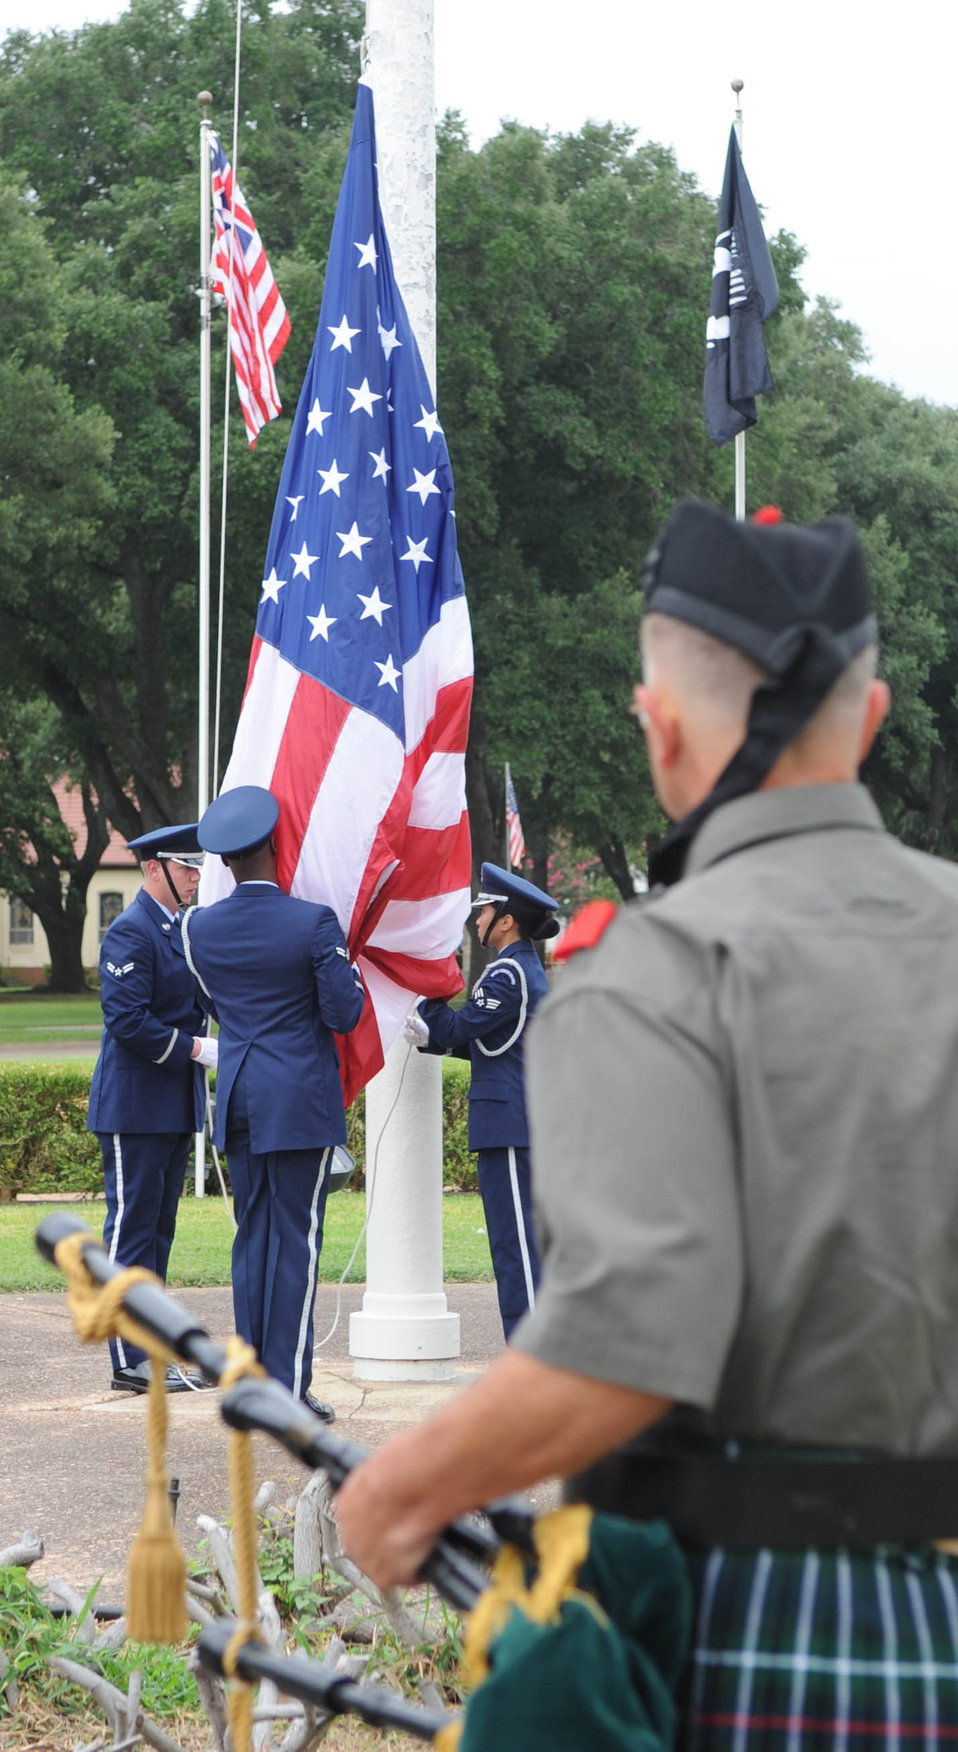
Remembering RAIDR 21

Base Honor Guard Airmen at Barksdale Air Force Base, La., raise the flag during the RAIDR 21 Remembrance Ceremony held at the 2nd Bomb Wing flag pole July 21. More than 200 Airmen, friends and family members attended the ceremony to remember the six fallen aircrew members who died in a crash July 21, 2008, while deployed to Andersen AFB, Guam. The call-sign of their B-52 Stratofortress was RAIDR 21.